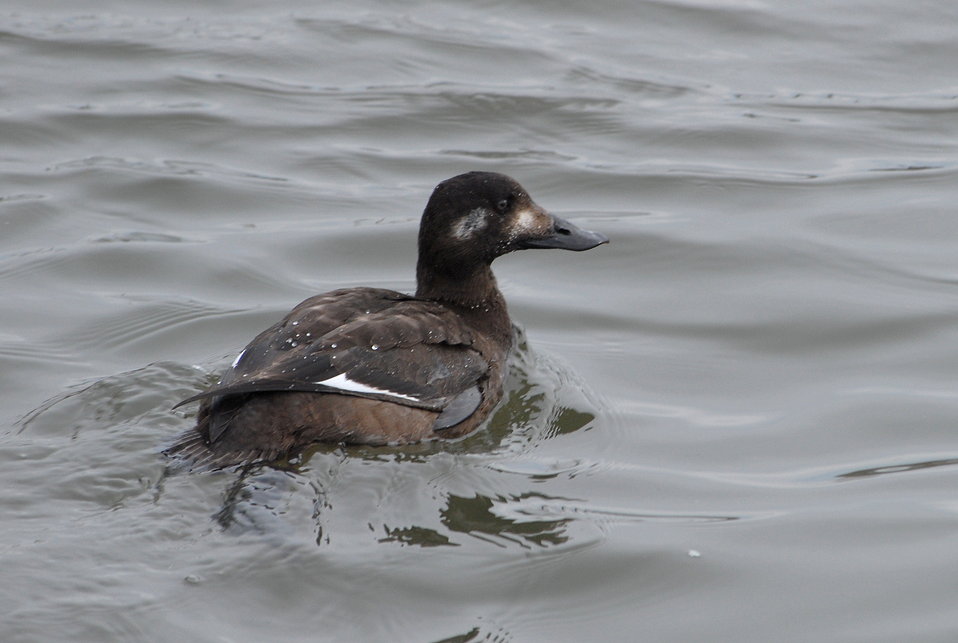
White-winged Scoter (female)